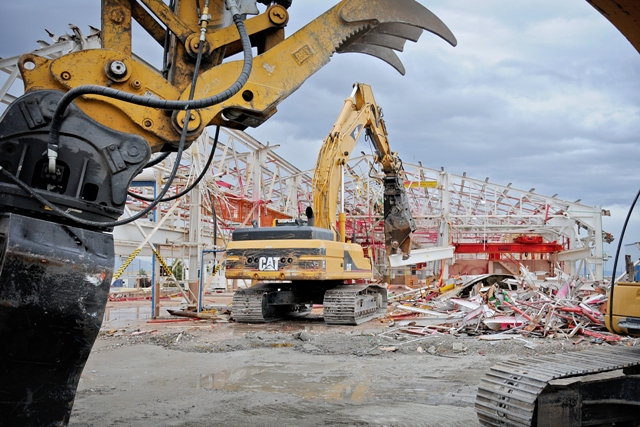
Idaho demolition of CPP-601

The demolition of CPP-601, a facility once part of the Fuel Reprocessing Center at the Idaho Nuclear Technology and Engineering Center, was funded by the Recovery Act.